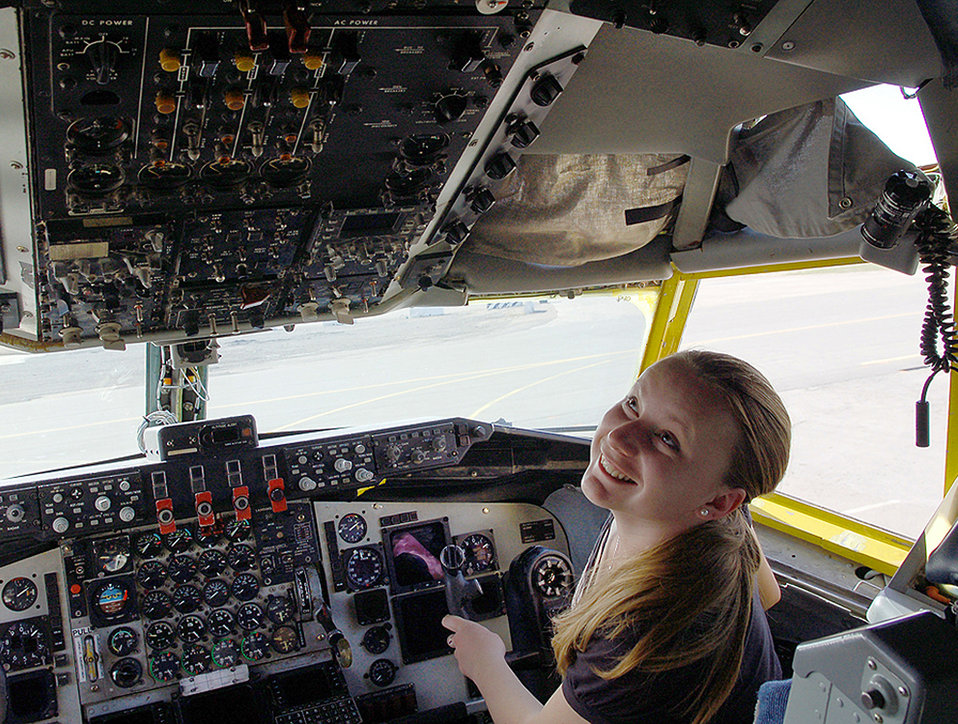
Kyrgyz students get insiders' glimpse of Manas mission

Alesia Bulankina, an American University of Central Asia student, checks out myriad knobs, dials and switches in the cockpit of a KC-135 Stratotanker March 26 at Manas Air Base, Kyrgyzstan. Ms. Bulankina, a 20-year-old junior from Bishkek who is majoring in business administration, visited Manas AB with 12 other students and faculty for an orientation tour and dinner hosted by the 376th Air Expeditionary Wing Public Affairs Office.